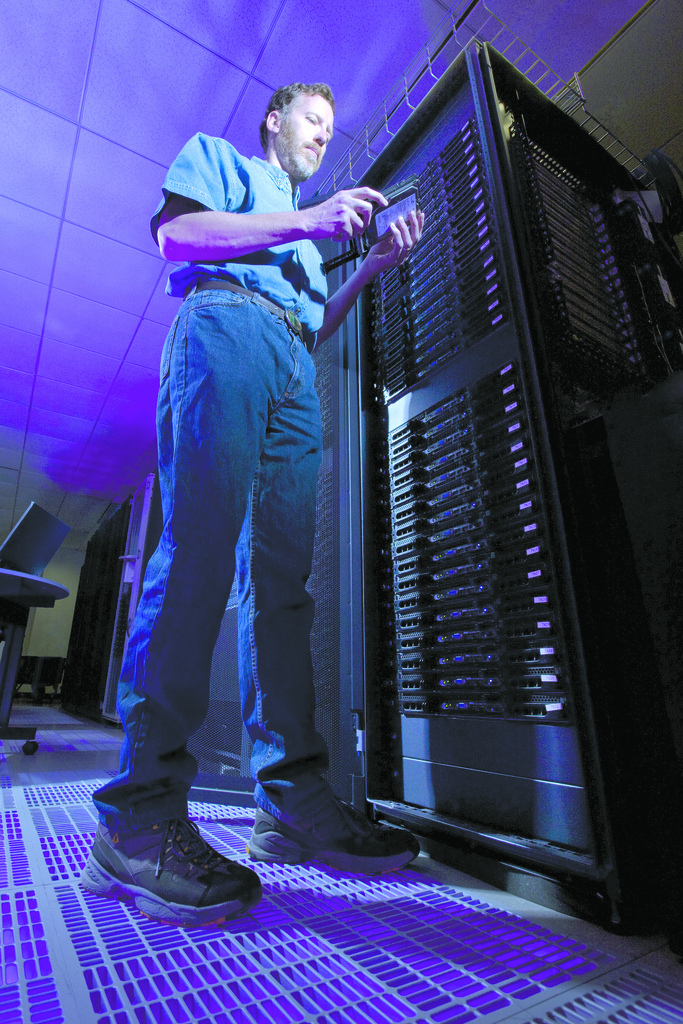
SANDIA COMPUTER SCIENTIST RON MINNICH IS SEEN WITH A SANDIA TESTBED CLUSTER KNOWN AS TALON, CONSISTING OF THE SAME SERVERS THAT COMPRISE THE 4,480-NODE THUNDERBIRD CLUSTER IN ALBUQUERQUE.

In running more than a million Linux kernels as virtual machines, Minnich and his colleagues ran one kernel in each of 250 virtual machines and coupled those with the 4,480 physical machines on Thunderbird.